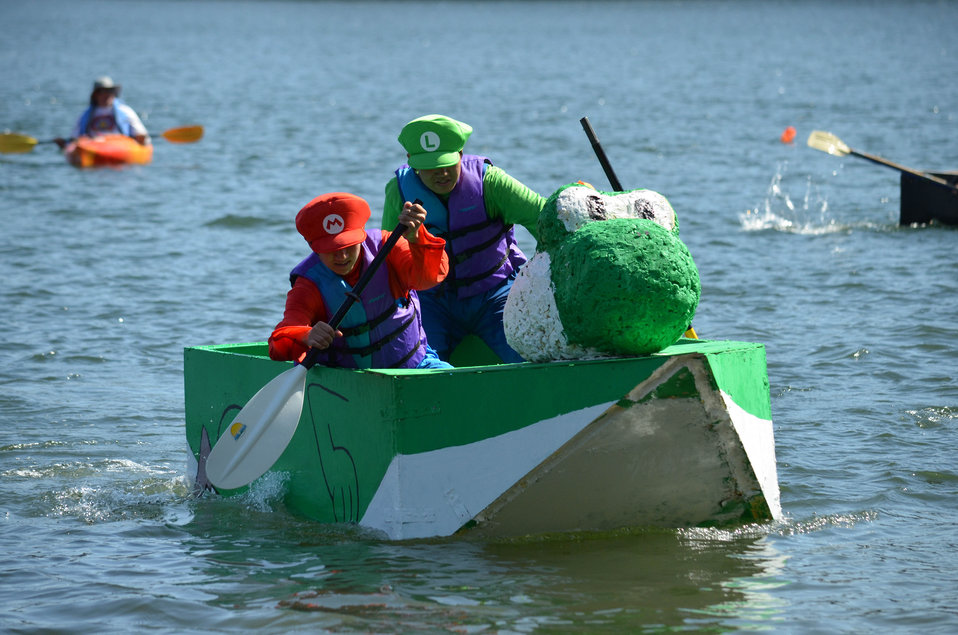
District employees judge annual Folsom High School Regatta

Students dressed as Mario and Luigi from the video game series pilot their “Yoshi” boat in the Folsom High School Regatta at Negro Bar State Park in Folsom, Calif., May 24, 2013. High school and middle school students constructed boats from cardboard, plywood, or other buoyant materials to compete in the race.